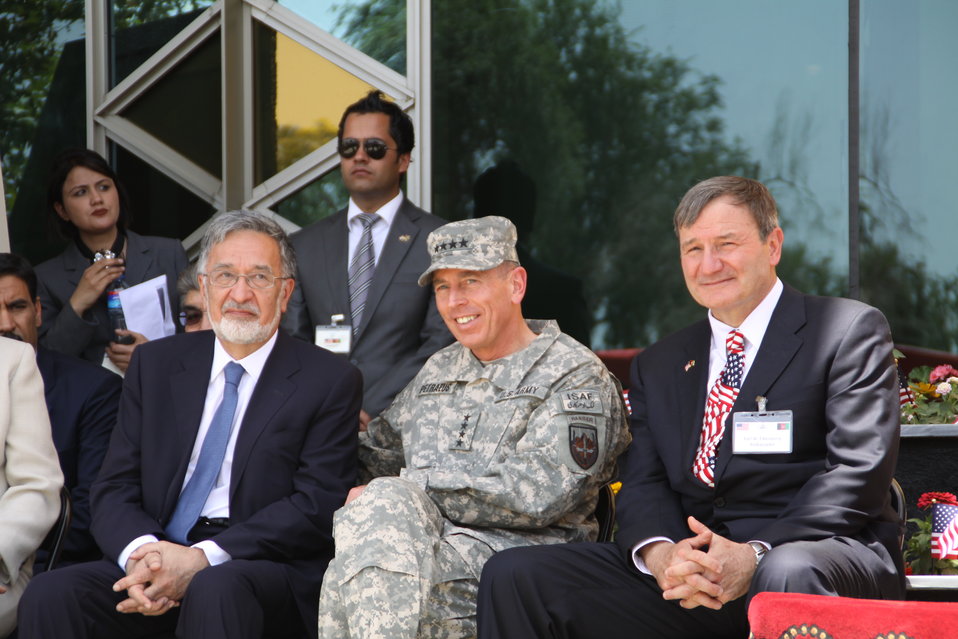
Kabul Official July 4th Celebration